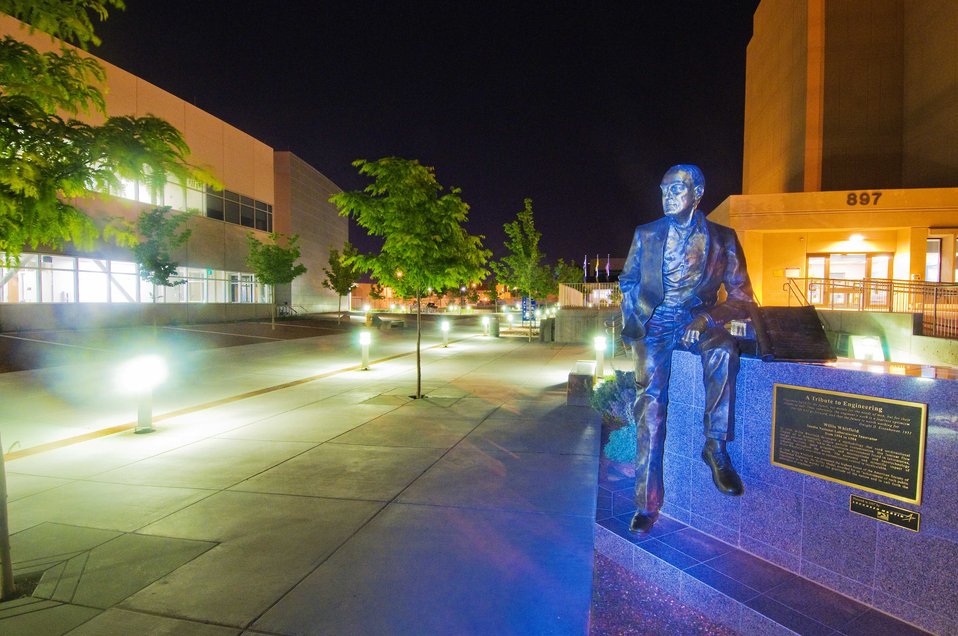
Night view of the Microsystems and Engineering Sciences Applications (MESA). The complex's initial mission is to produce electronic circuits and computer chips designed to withstand high levels of radiation.
These hardened electronics are critical to national security needs. Beyond its security role, MESA's combination of high-performance computing simulations, scientific research, and production capabilities in electronics and optics at the micro and nano levels makes it a world leader in a new type of simulation-led engineering that improves the quality of consumer goods.